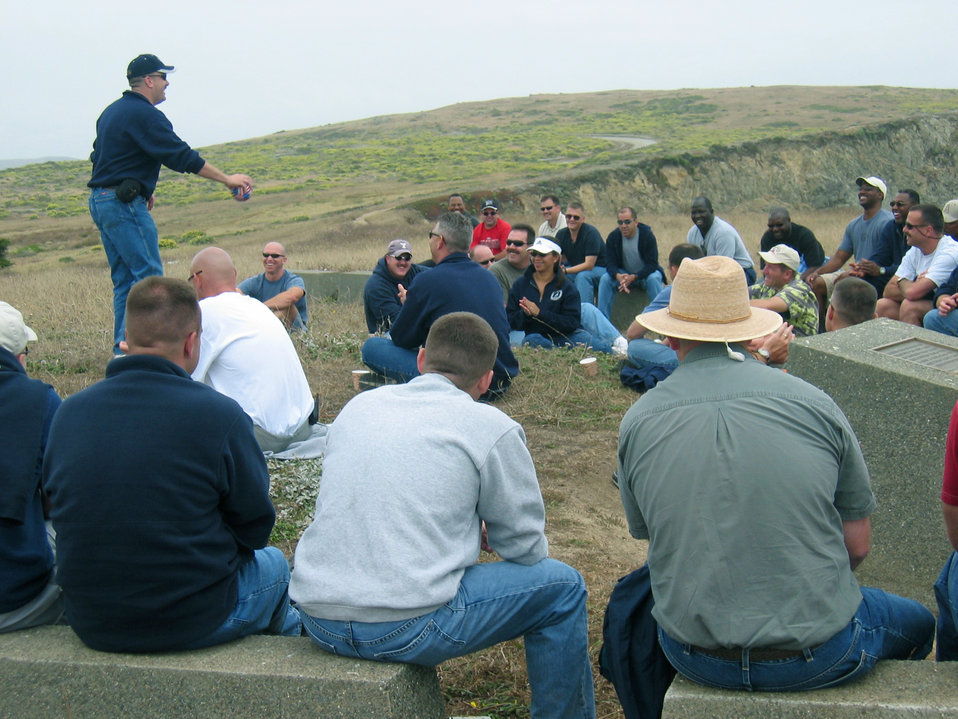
A different viewpoint

BODEGA BAY, Calif. -- An Air Force master sergeant tosses a ball to one of his fellow students here during a Coast Guard Chief Petty Officer's Academy outing. A few Air Force senior noncommissioned officers attend each class to learn about leadership and teamwork from a different viewpoint while sharing their own experiences with the Coast Guardsmen.